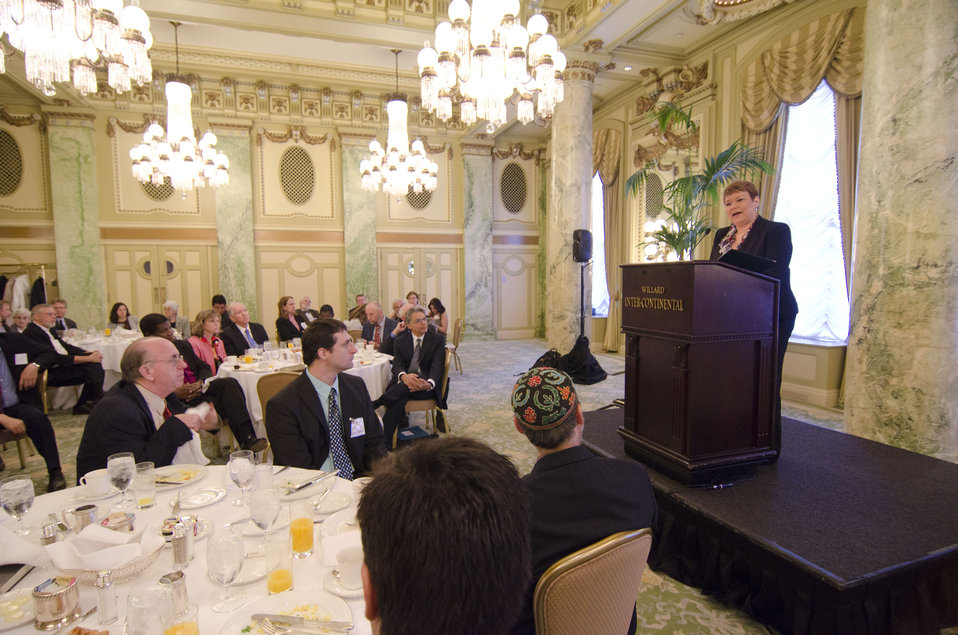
2011-05-05 NRCCCPrayerBreakfast 057

US EPA Administrator Lisa P. Jackson addresses the guests after accepting the Steward of God's Creation Award from the National Religious Coalition on Creation Care.